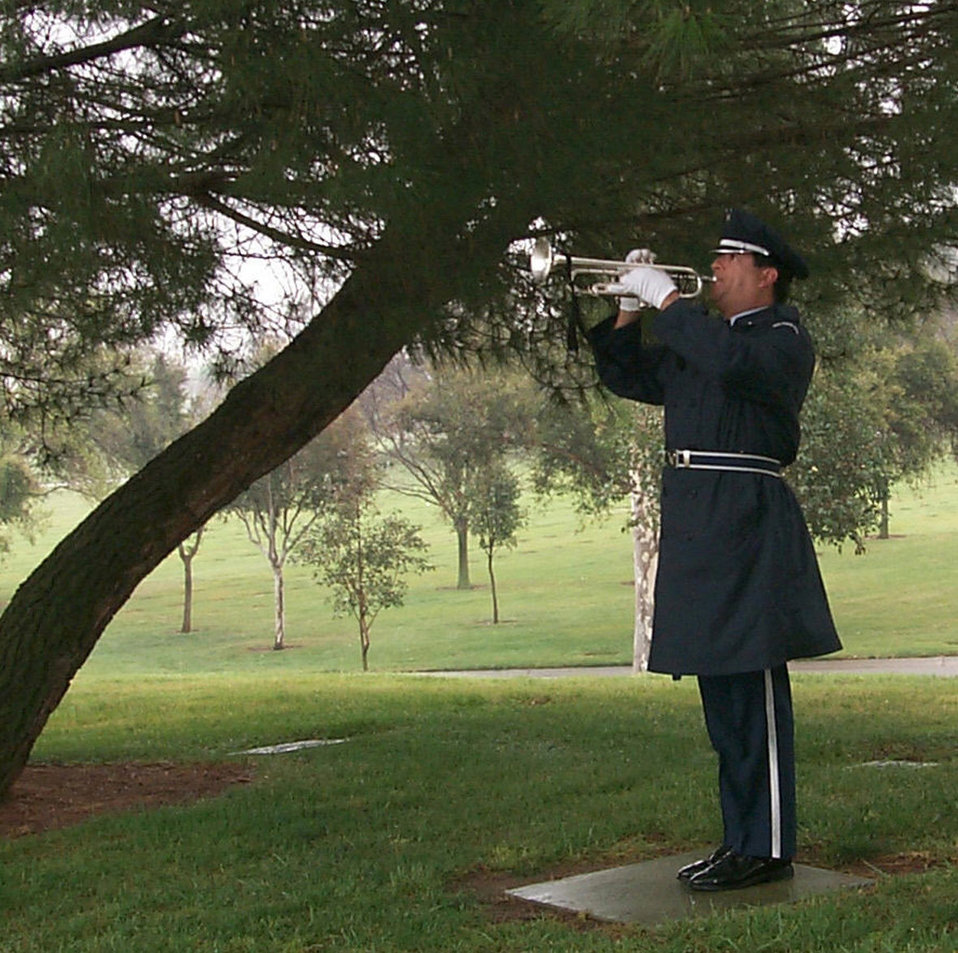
Taps Played

RIVERSIDE NAITIONAL CEMETERY, Calif. -- Tech. Sgt. Robert Carreon of the Blue Eagles Honor Guard plays Taps during a funeral ceremony at California's Riverside National Cemetery.